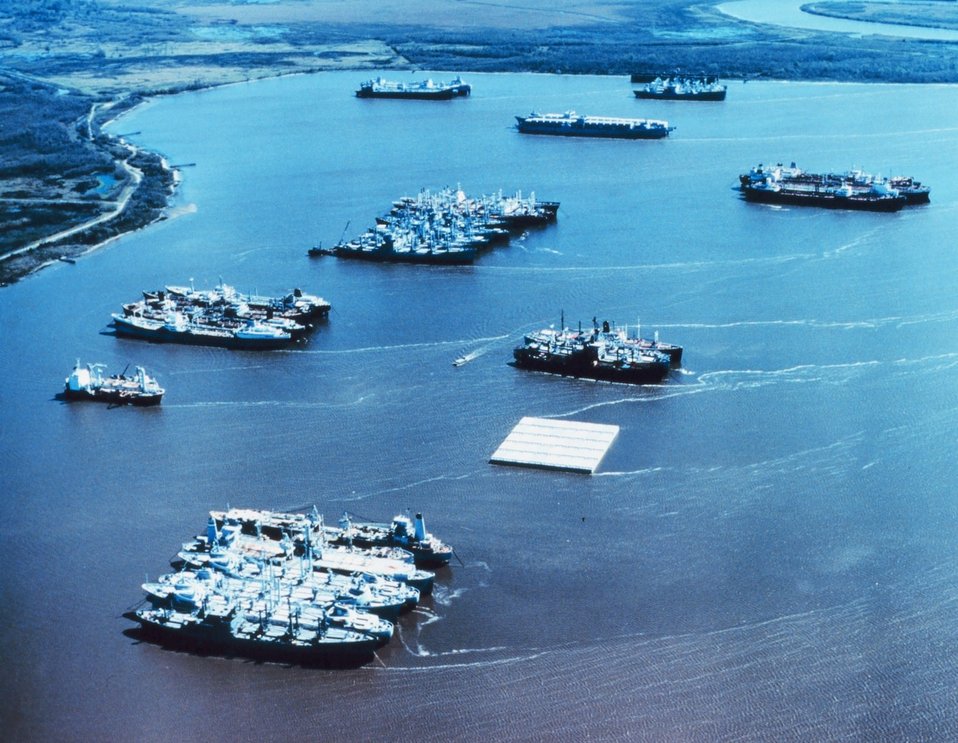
2958 North Latitude 9351 West Longitude.